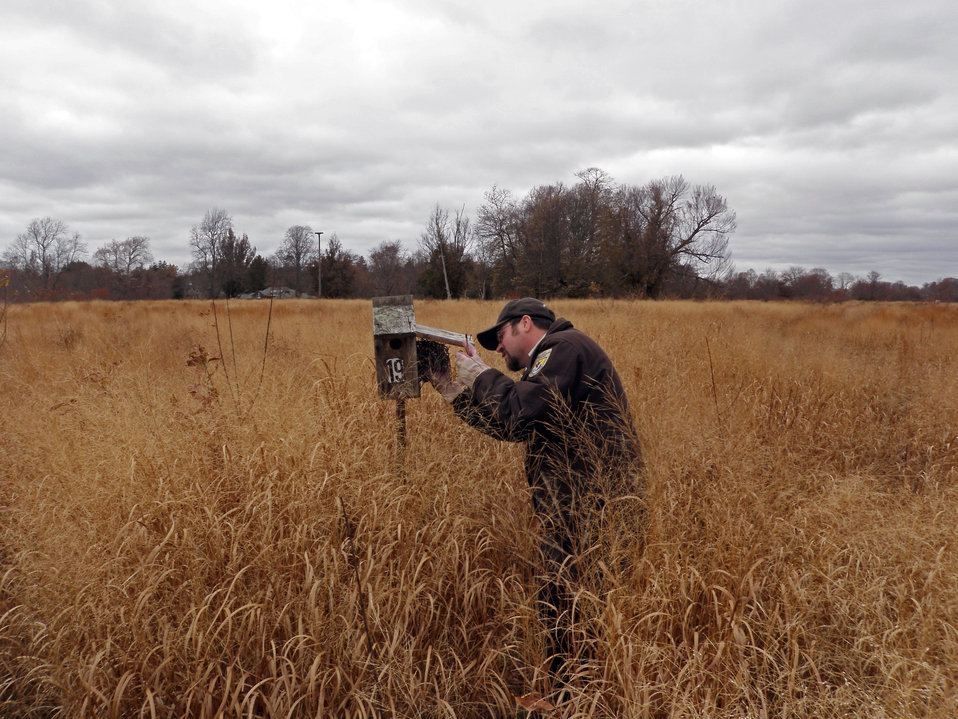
Checking bluebird boxes

Seatuck National Wildlife Refuge, NY.